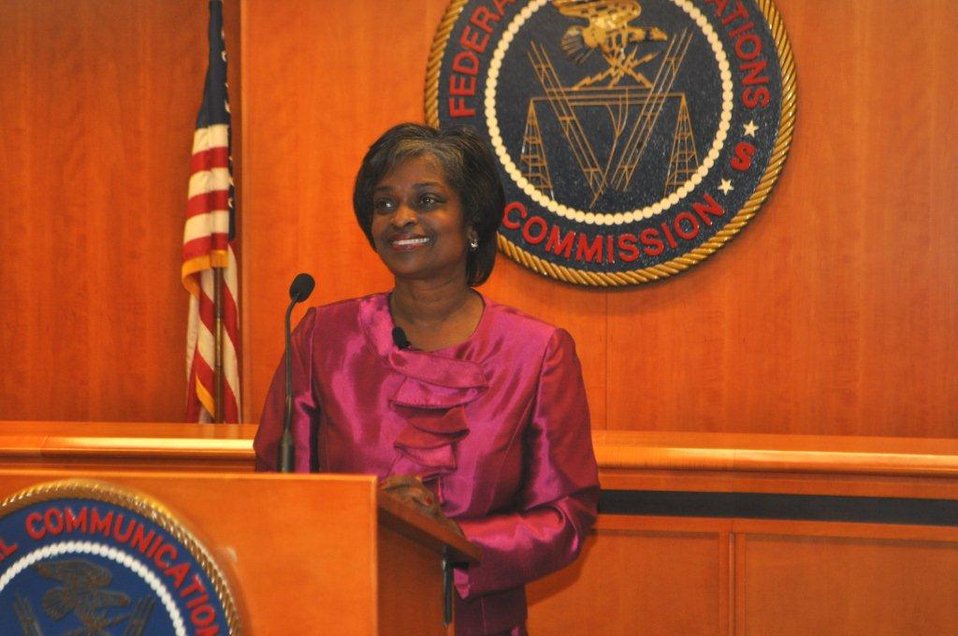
Acting Chairwoman Mignon Clyburn giving statement to FCC staff